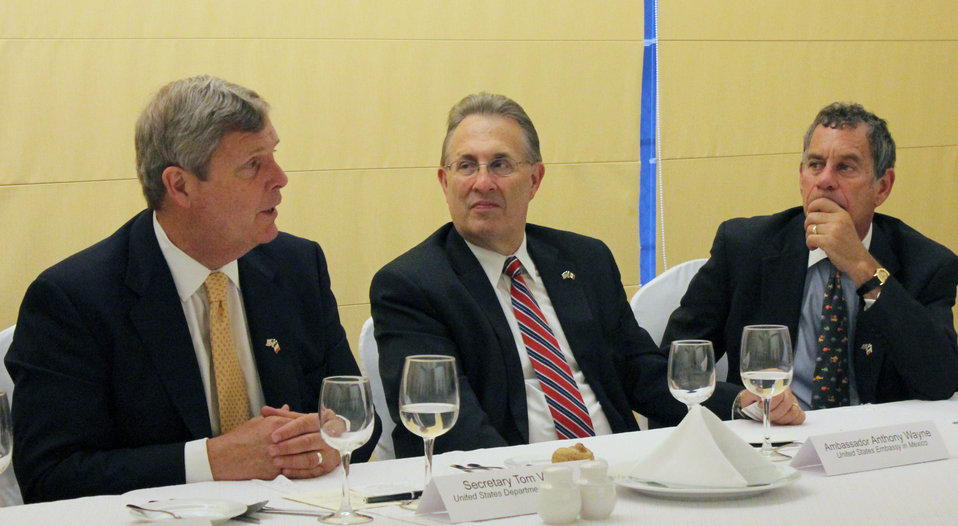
Agriculture Secretary Tom Vilsack and U.S. Ambassador to Mexico Anthony Wayne meet with Mexican producers at the U.S. Trade Mission to Mexico on Friday, May 17, 2013.